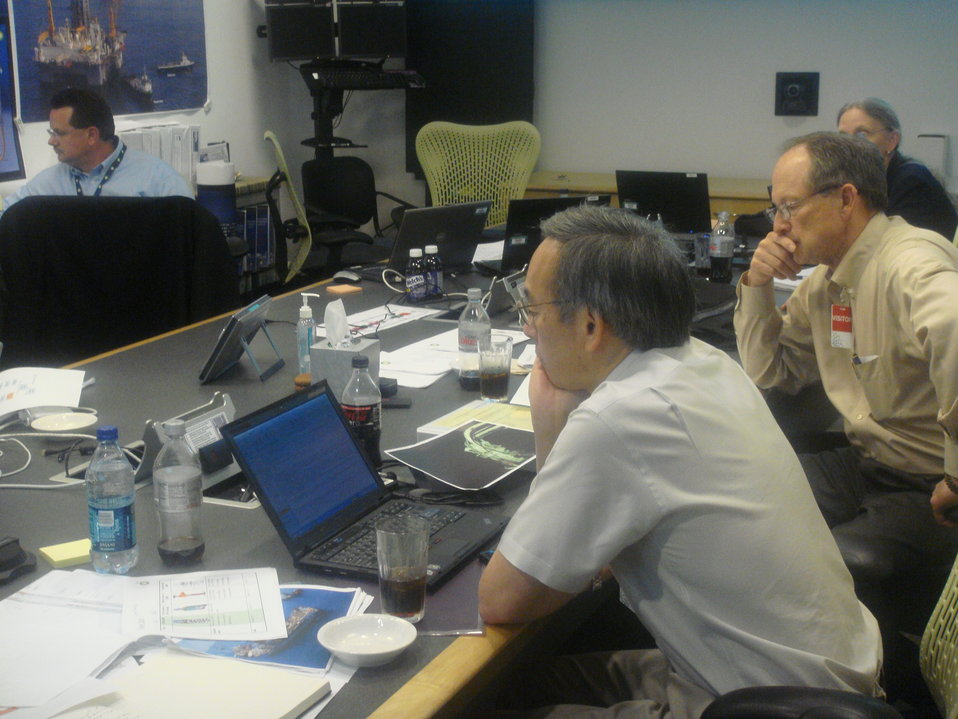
chu3

Energy Secretary Steven Chu consults with scientists and BP officials in Houston on May 25, reviewing BP's plans for stopping the oil spill and providing scientific advice on how to maximize chances of success